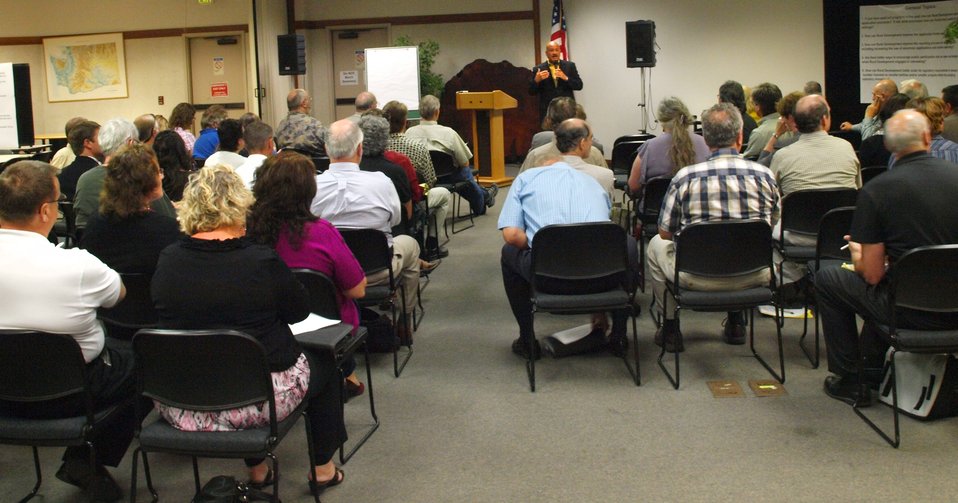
Stakeholder WA 001

Washington State Director Mario Villanueva makes opening remarks at the Stakeholder Forum held in Olympia July 29. Over 70 key people representing government, business, and housing attended.